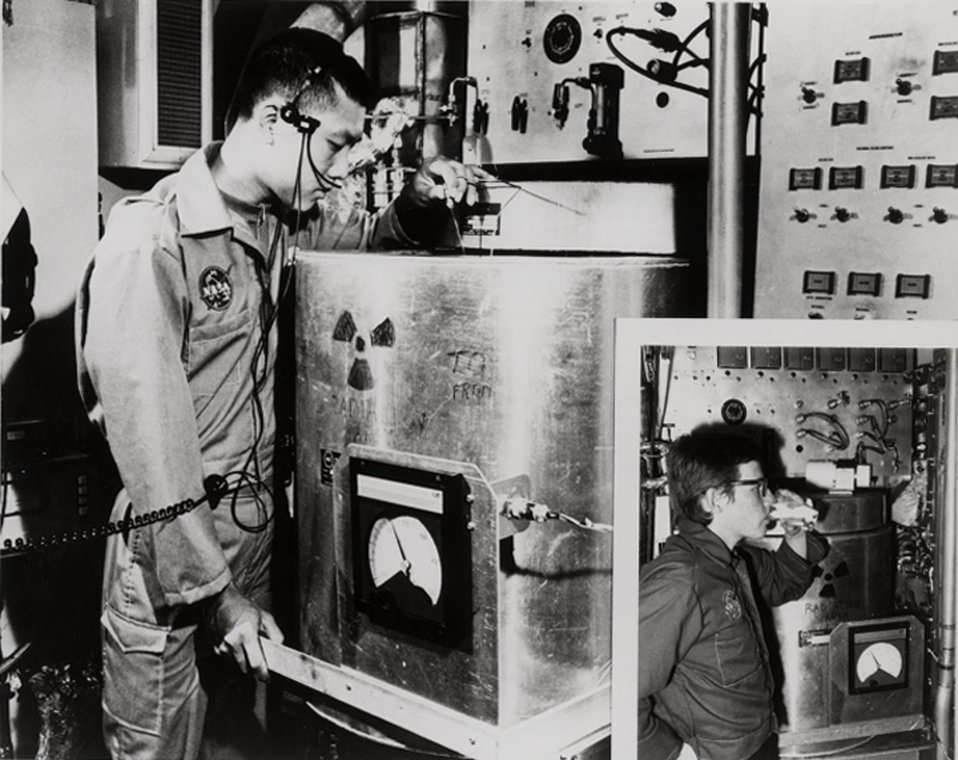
Four men spent 90 days in the space simulation chamber McDonnell-Douglas Astronautics Corp, at Huntington Beach, CA, successfully demonstrating the effectiveness of the AEC's radioisotope powered water recovery system.